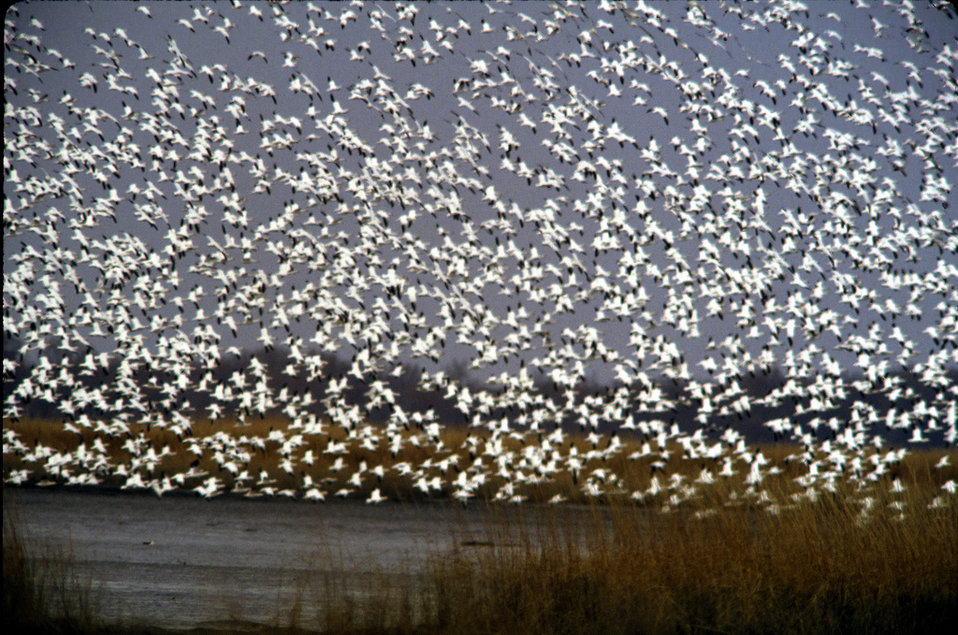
snow geese

Bombay Hook National Wildlife Refuge, DE